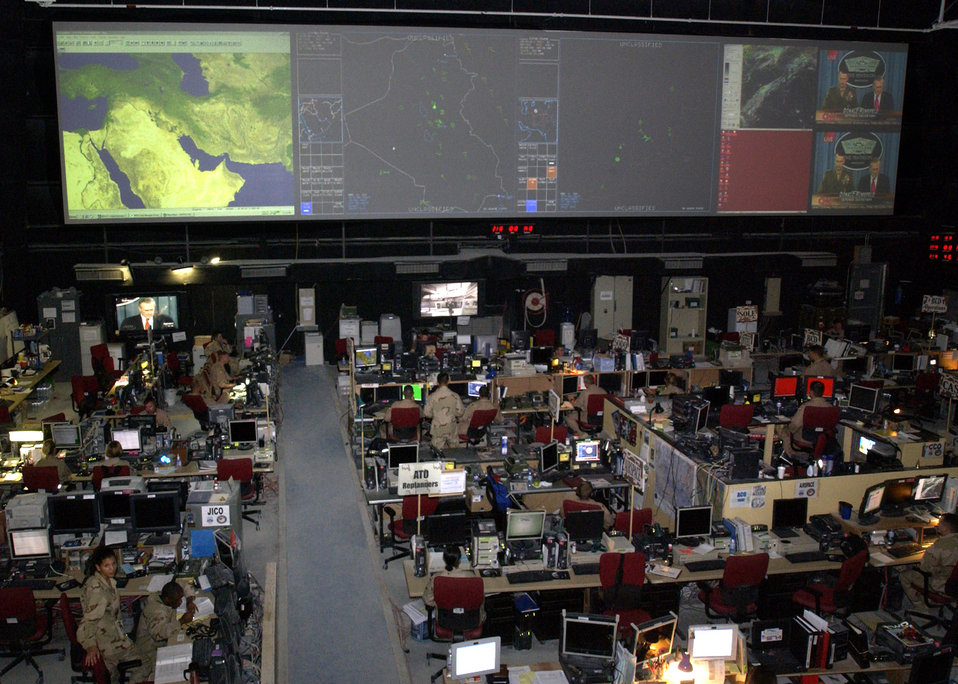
All under control

SOUTHWEST ASIA -- The Combined Air Operations Center at a forward-deployed location is the